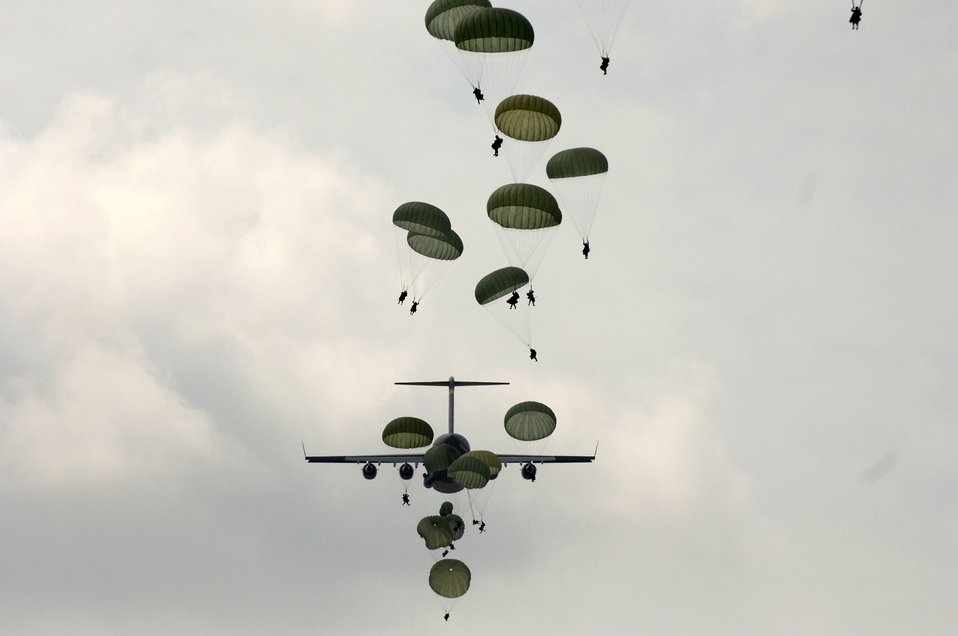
Testing joint capabilities

Army Soldiers jump out of a C-17 Globemaster III Aug. 21 during a joint forcible entry exercise with the Air Force over the East Coast. The JFEX training exercise is designed to validate combat readiness, leadership, planning staff, aircrews and ground forces in joint airborne warfighting capabilities through integrated scenario-based training operations. The Soldiers are with the 20th Engineer Battalion at Fort Bragg, N.C.